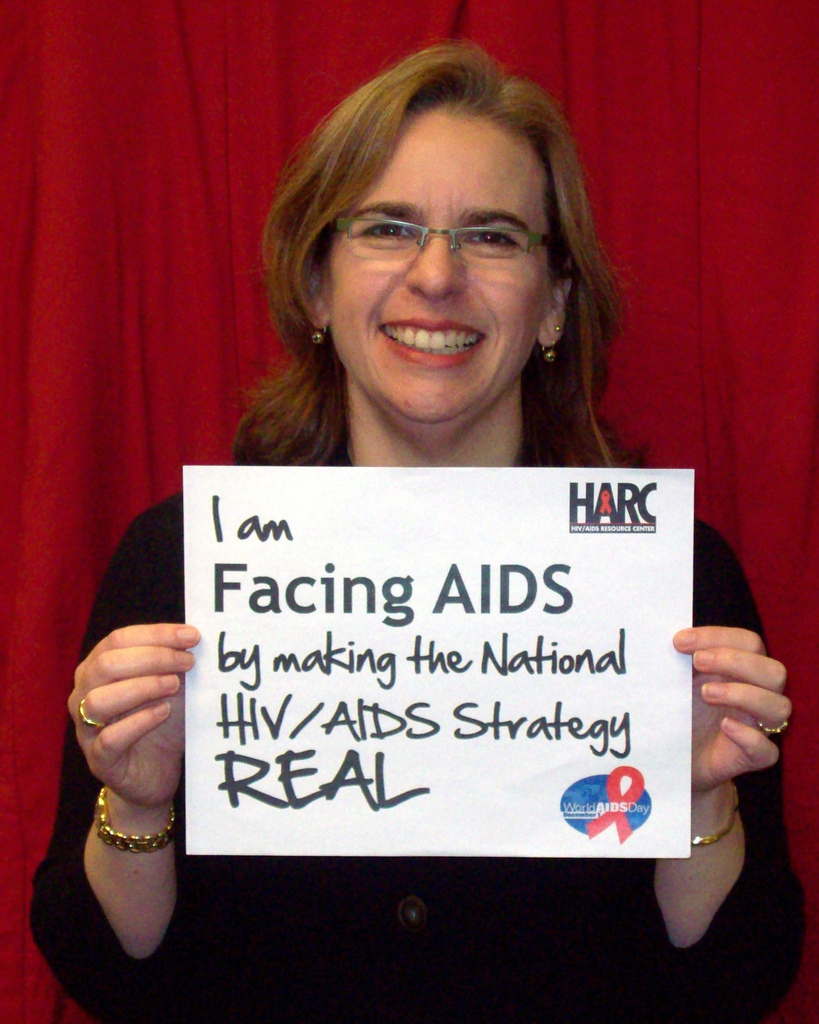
I am Facing AIDS through NHAS-4